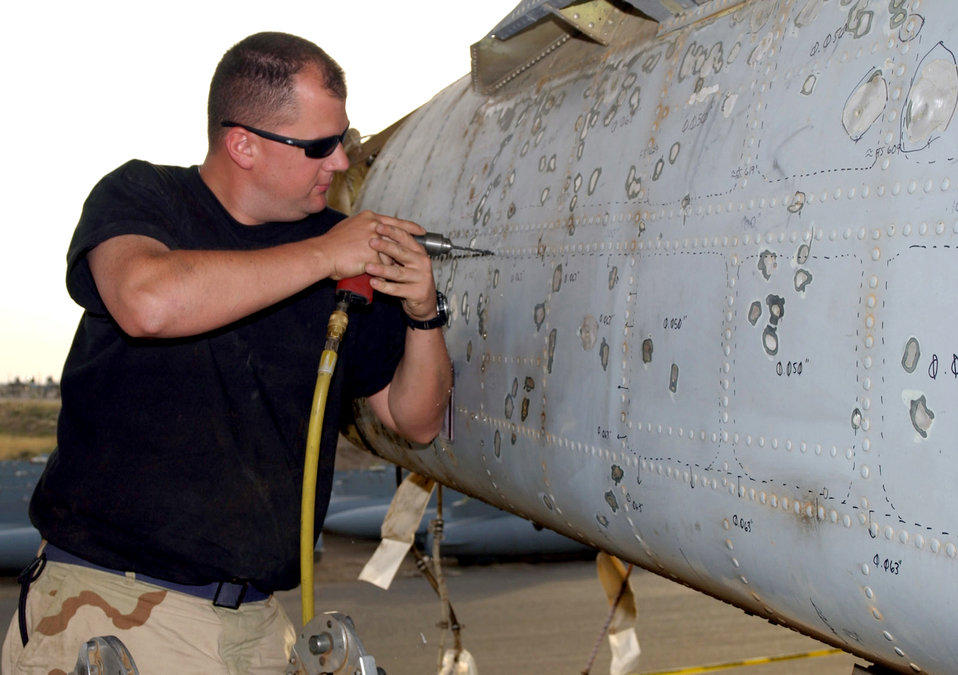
Battle damage repair

OPERATION IRAQI FREEDOM -- Tech. Sgt. Mike Emmendorfer drills out rivets while repairing battle damage on an A-10 Thunderbolt II that was shot by enemy fire over Iraq. Emmendorfer is a depot aircraft structural maintenance craftsman with the 649th Combat Logistics Support Squadron from Hill Air Force Base, Utah. He is deployed to a desert base in Southwest Asia.